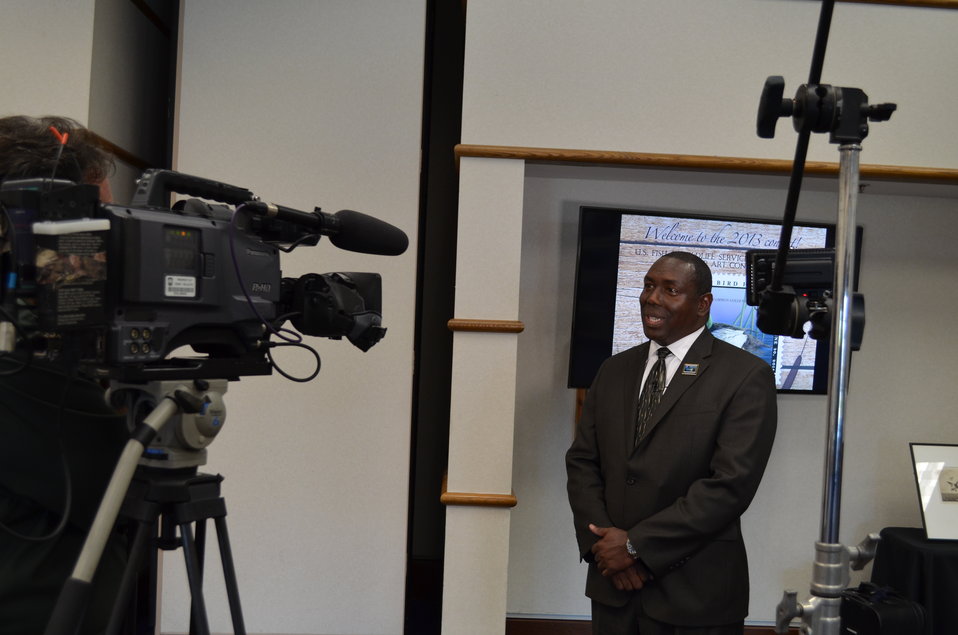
Jerome Ford, Assistant Director Migratory Birds (USFWS) talks about history of the Duck Stamp with OhioWild, a TV show that airs on local PBS channels.